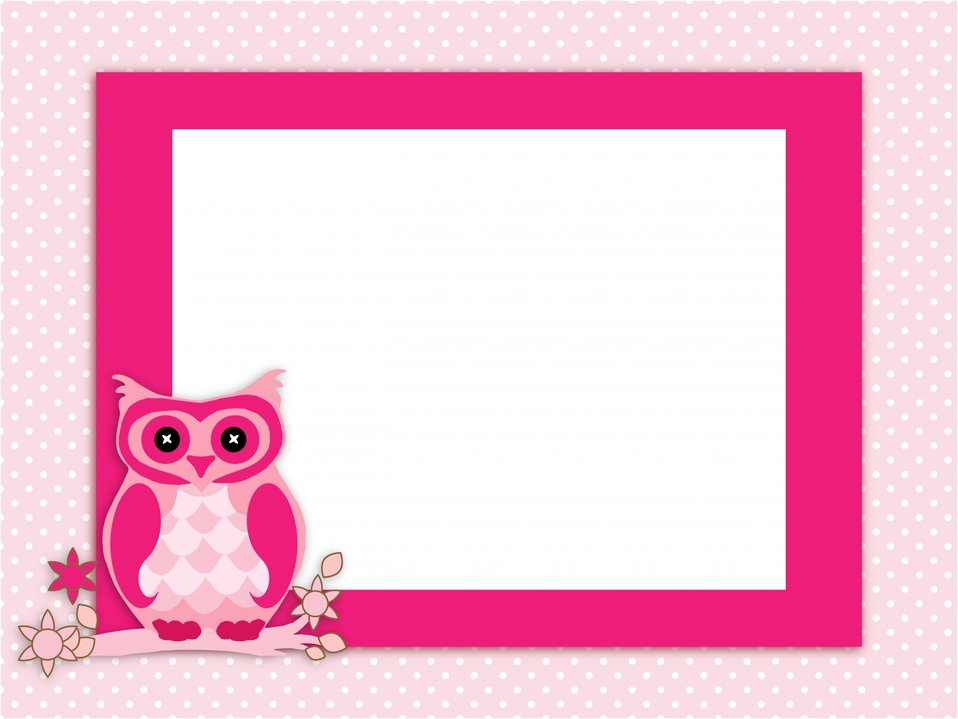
Owl invitation card pink

Cute pink owl invitation card template or frame for baby shower.